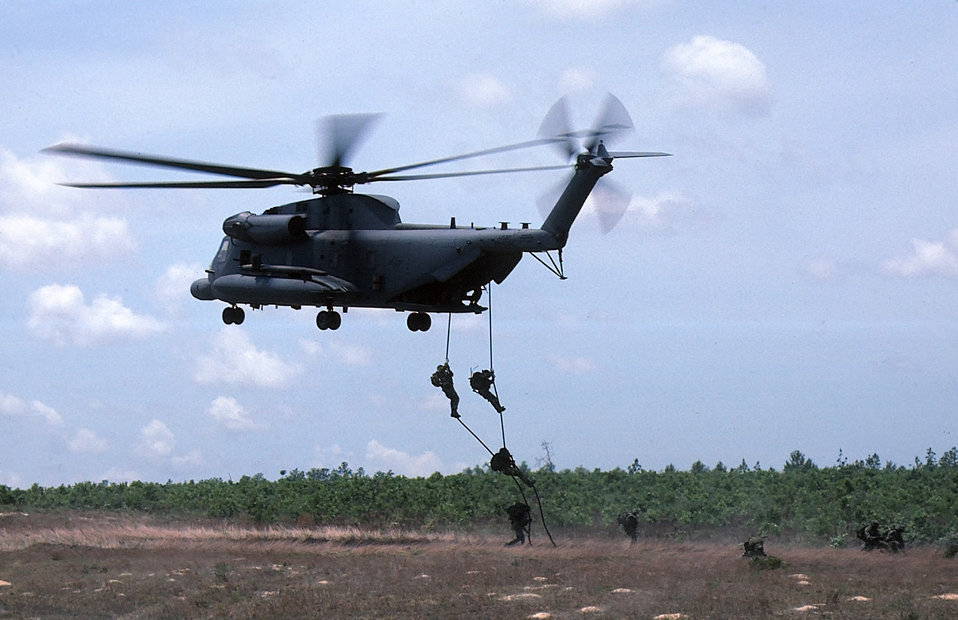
Out the back door

FILE PHOTO -- The 20th Special Operations Squadron, located at Hurlburt Field Fla., is one of eight flying squadrons within the 16th Special Operations Wing. Known as the